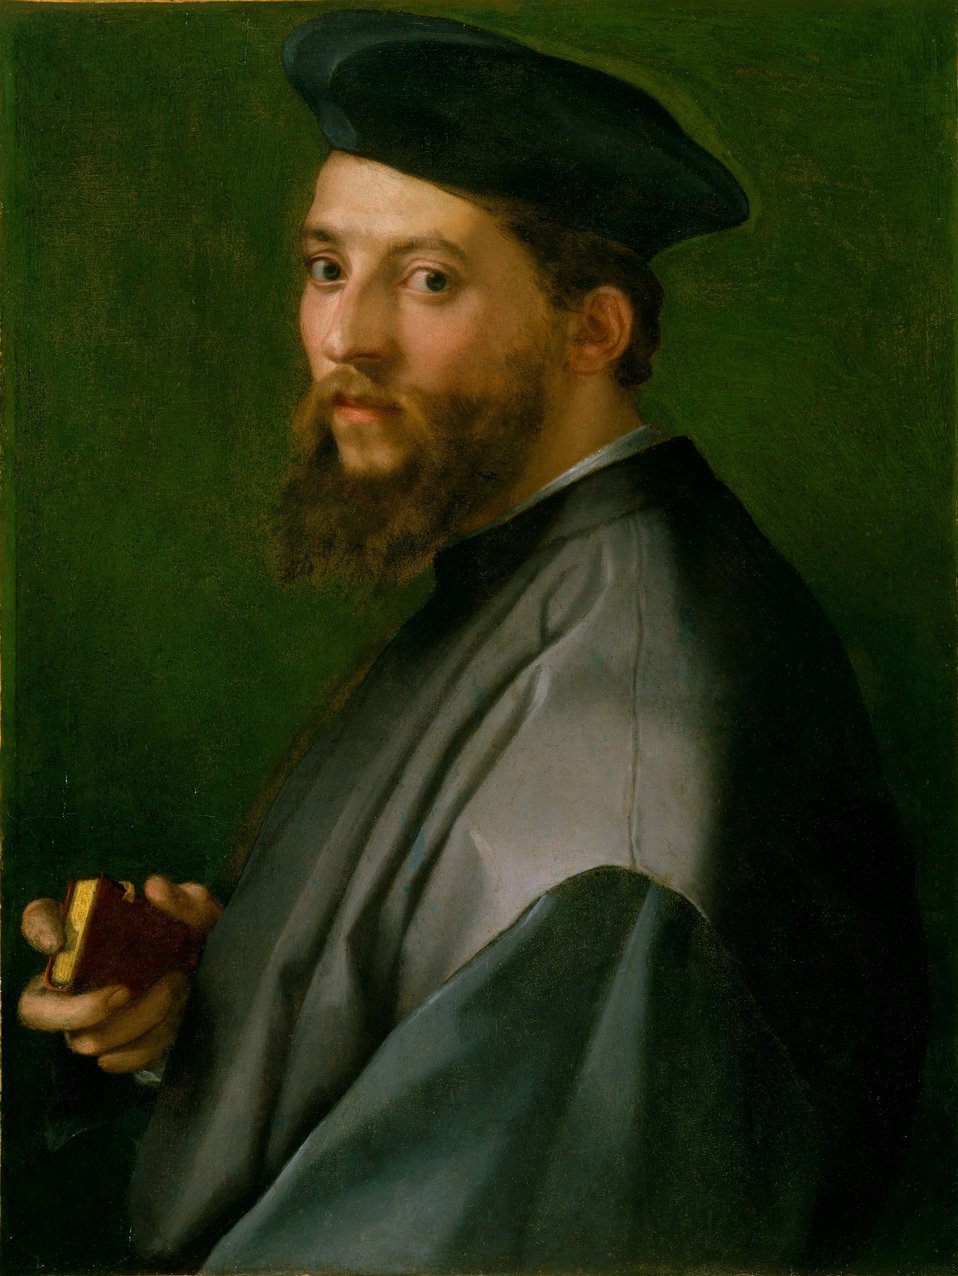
Andrea del Sarto - Ritratto di un uomo (MET Museum of Art, NYC)